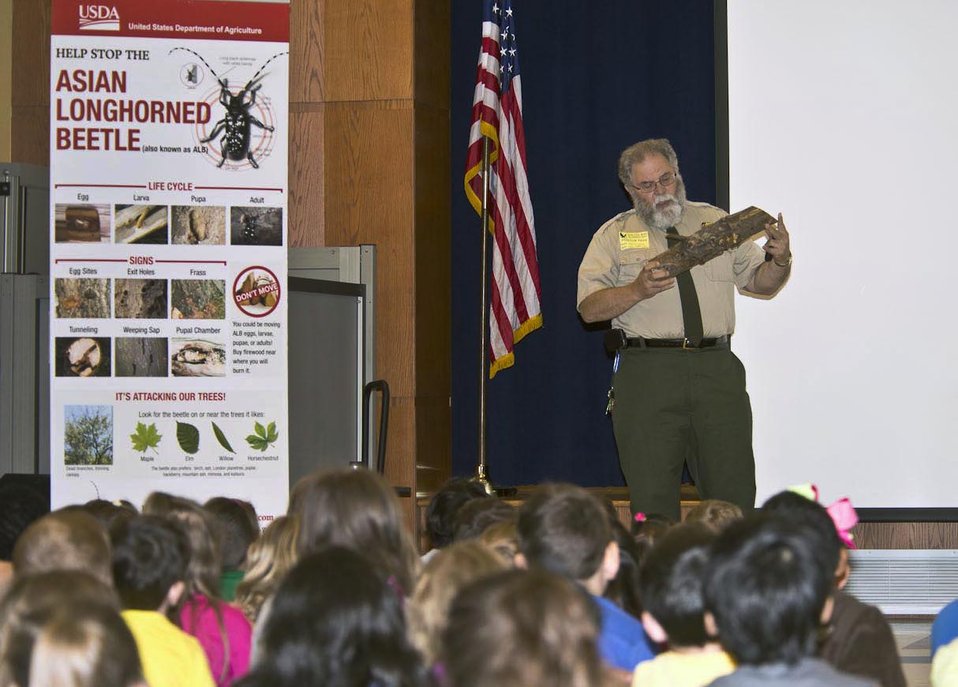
U.S. Department of Agriculture (USDA) Animal and Plant Health Inspection Service (APHIS) Asian Longhorned Beetle (ALB) Eradication Program New York Project Manager Joseph Gittleman presents the story of the ALB to Kindergarten through 2nd graders at the South Bay Elementary School in West Babylon, NY on Friday, May 23, 2014. The ALB story is told using gestures and movements to get students engaged and informed about how they can check trees for the beetle this summer.